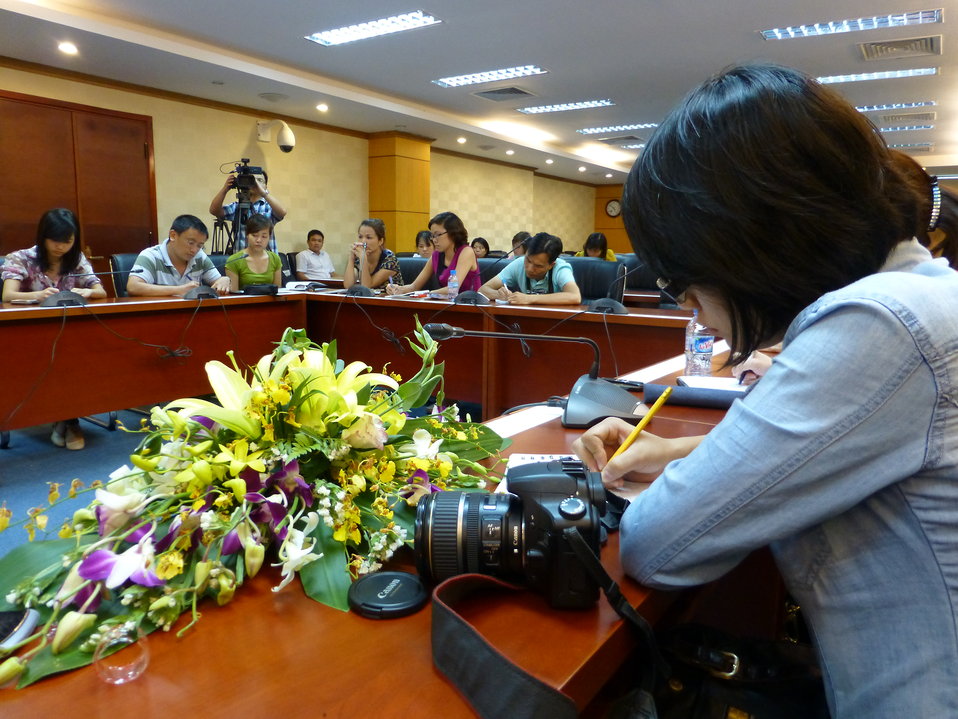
Press Conference at the 7th Joint Advisory Committee Meeting in Hanoi

Hanoi, September 21, 2012